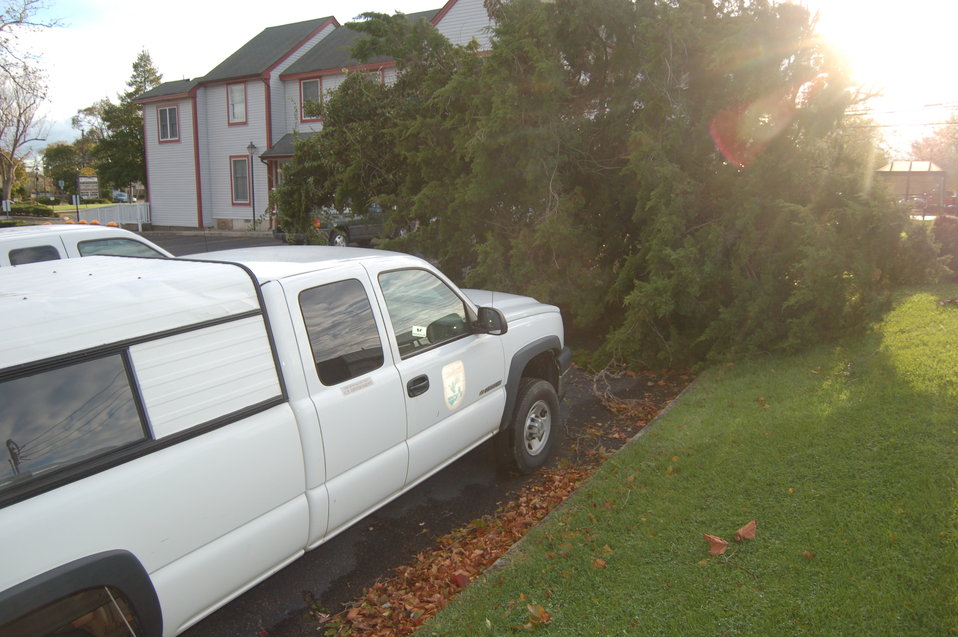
Hurricane Sandy hit the New Jersey Field Office

A fallen tree nearly misses the government vehicles and the New Jersey Field Office in Pleasantville, N.J.